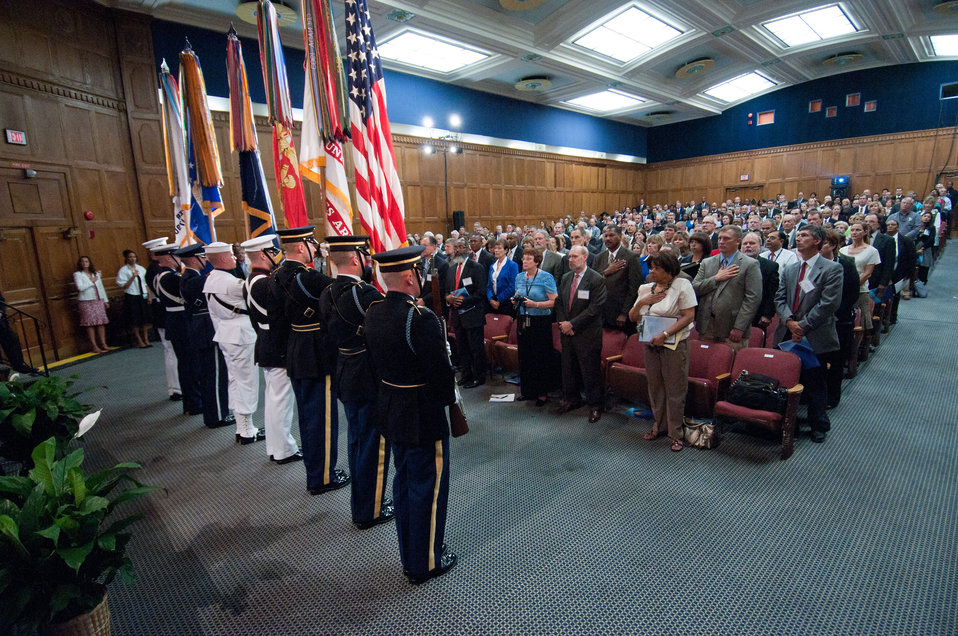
United States Department of Agriculture 63rd Secretary’s Annual Honor Awards held in the Thomas Jefferson Memorial Auditorium in Washington, D.C. on Wednesday, September 14, 2011. The Armed Forces Color Guard presented the colors and the “National Anthem.” Deputy Assistant Secretary for Administration Oscar Gonzales led the Pledge of Allegiance. Deputy Secretary of Agriculture Kathleen Merrigan provided opening remarks and introduction of Agriculture Secretary Tom Vilsack.